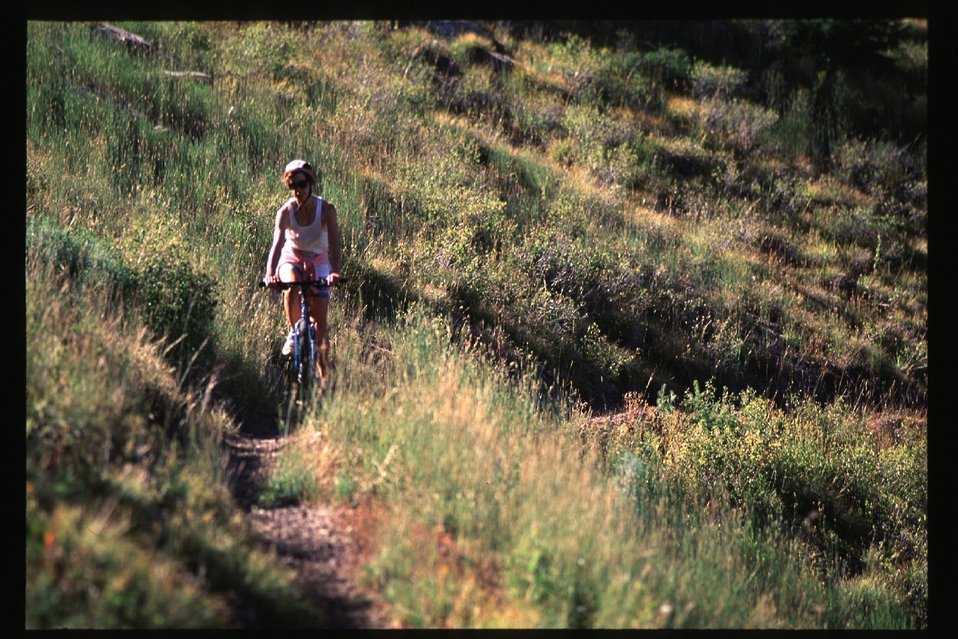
Recreation Scenic Biker Shoshone Field Office USRD Upper Snake River District